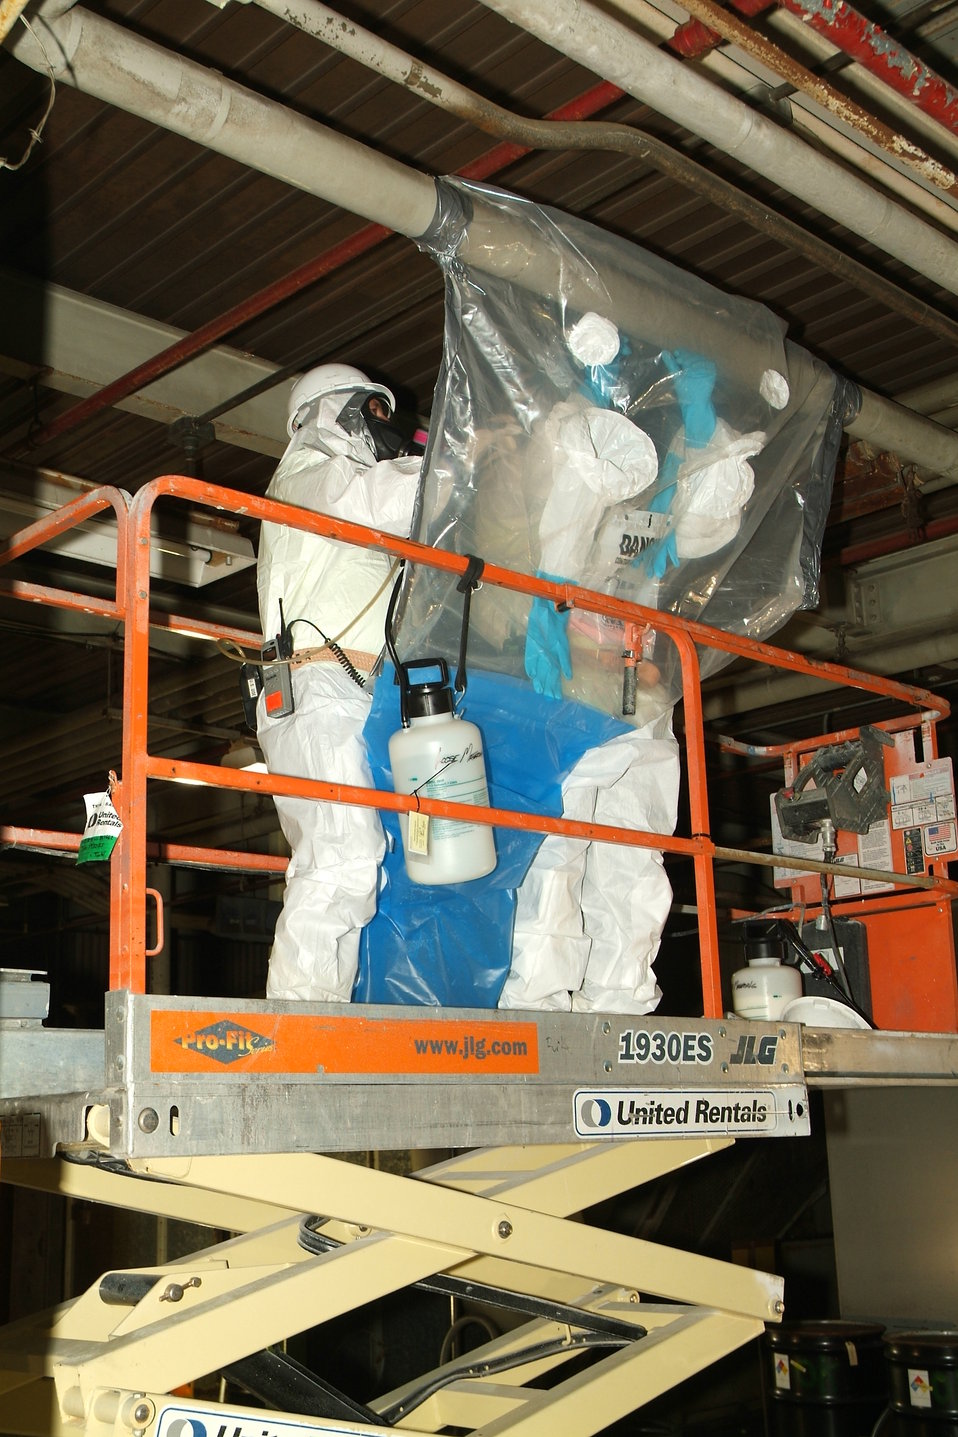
Paducah - Asbestos Removal

Recovery Act workers remove hazardous asbestos used for insulation throughout the old Metals Plant.